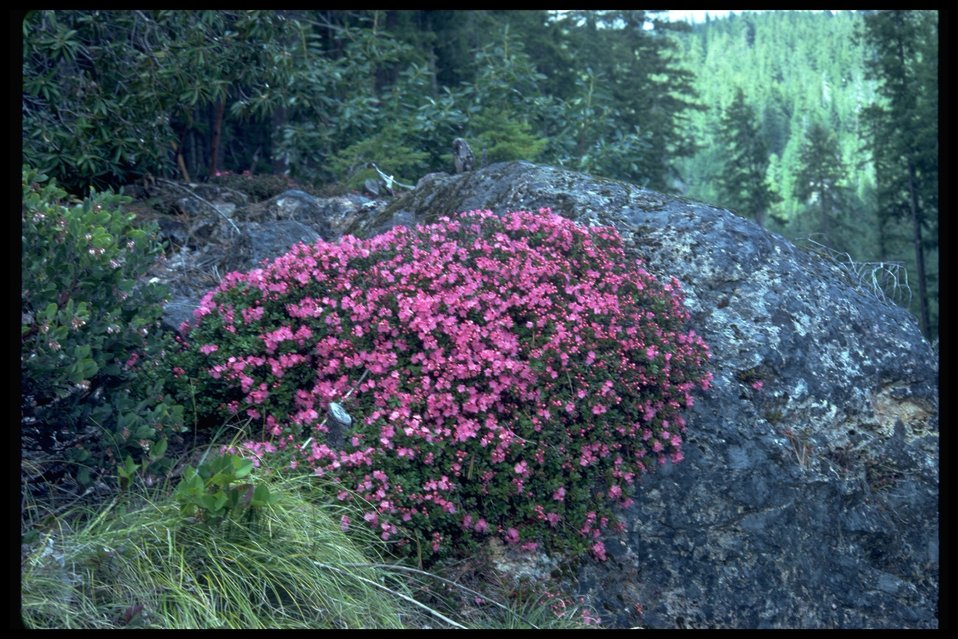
Kalmiopsis fragrans, or commonly known as North Umpqua Kalmiopsis.